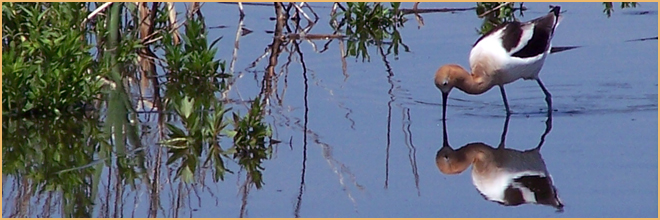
Cold Springs National Wildlife Refuge - bird feeding

The Cold Springs National Wildlife Refuge, located east of Hermiston, Oregon, is a preserve for native and migratory birds.